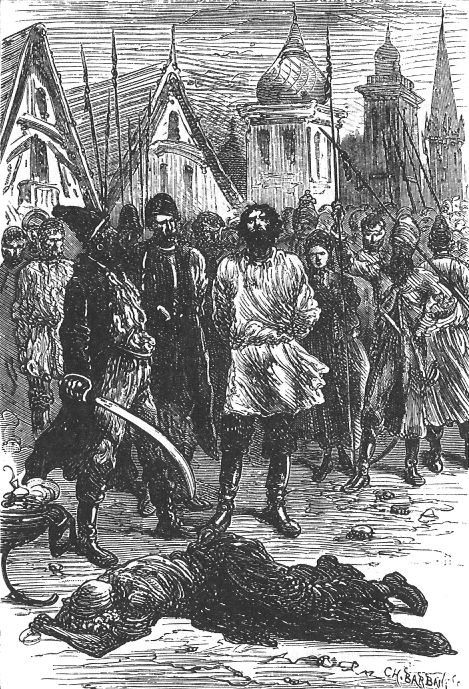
An illustration from the novel 'Michael Strogoff: The Courier of the Czar' by Jules Verne drawn by Jules Férat. Polski: Ilustracja powieści Juliusza Verne'a 'Michał Strogow, kurier carski' autorstwa Julesa Férata. Français : 'Michel Strogoff. Le courier du tzar', Jules Férat. Čeština: Původní ilustrace Julese Férata k románu J. Verna 'Carův kurýr'. Français : Michel Strogoff était aveugle.